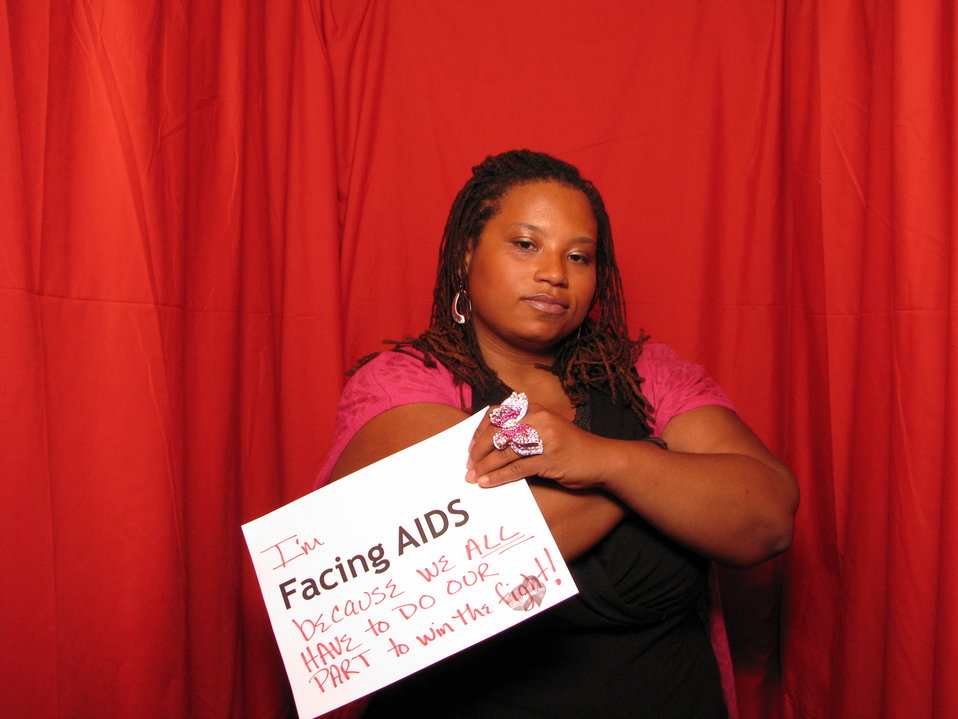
I'm FACING AIDS because we ALL HAVE TO DO OUR PART to win the fight!

From the AIDS.gov photo booth at the U.S. Conference on AIDS, September 2010 (Orlando, FL).